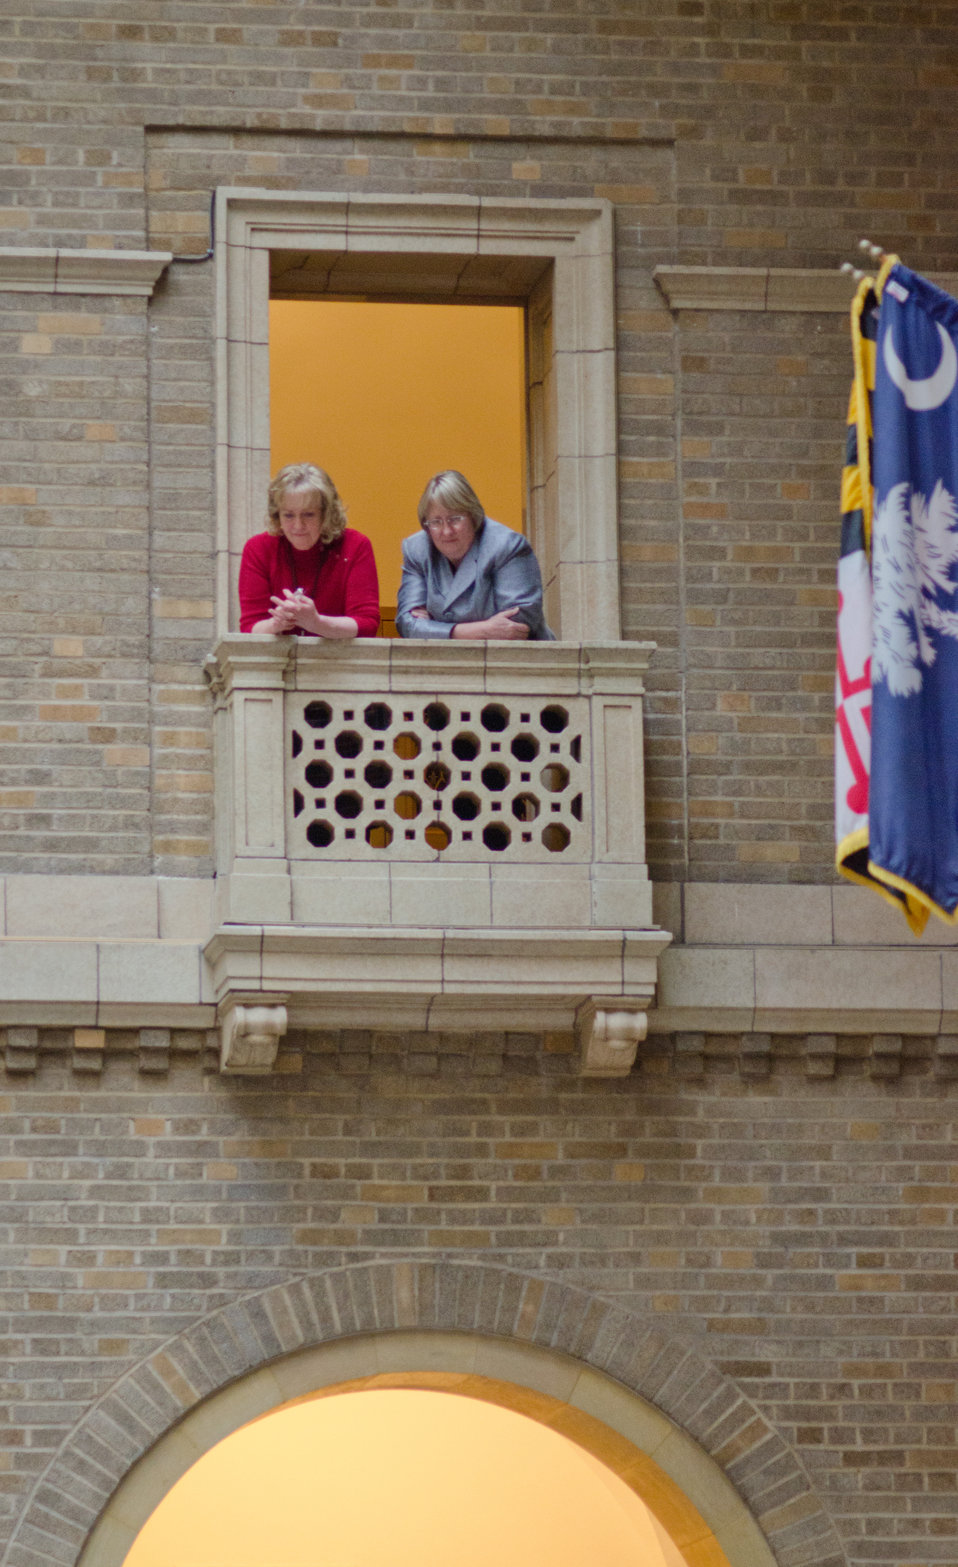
Two observers find one of the few vantage points where you can see all those in attendance at on the Patio of the Whitten Building at the U.S. Department of Agriculture (USDA) . Agriculture Secretary Tom Vilsack and his wife Christie's sponsored the event at the headquarters building in Washington, DC, on Friday, March 25, 2011.